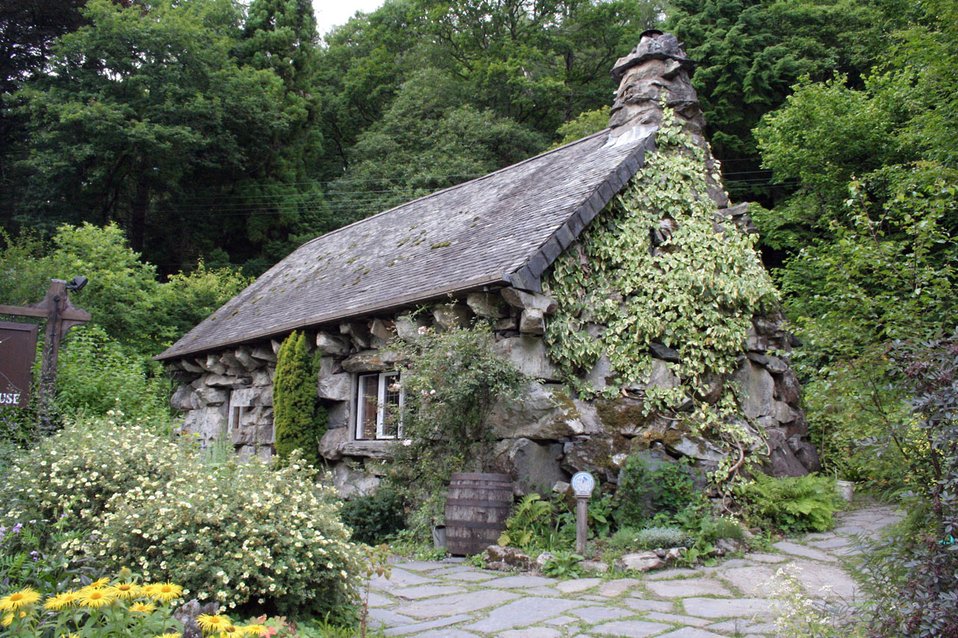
Ugly house

Tourist attraction in wales - ugly house.